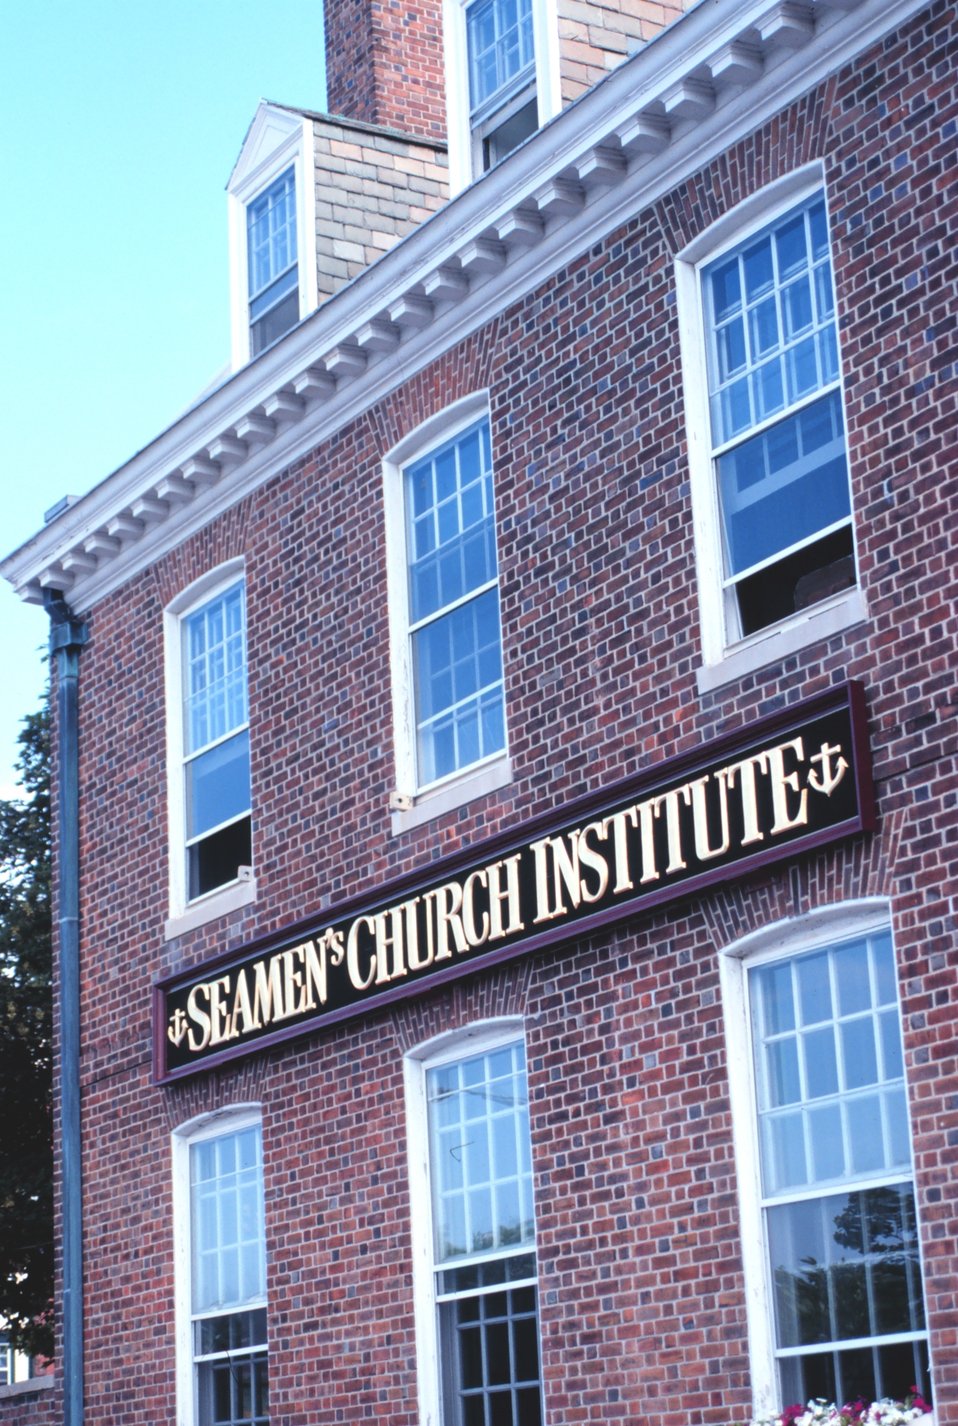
The Seamen's Church Institute